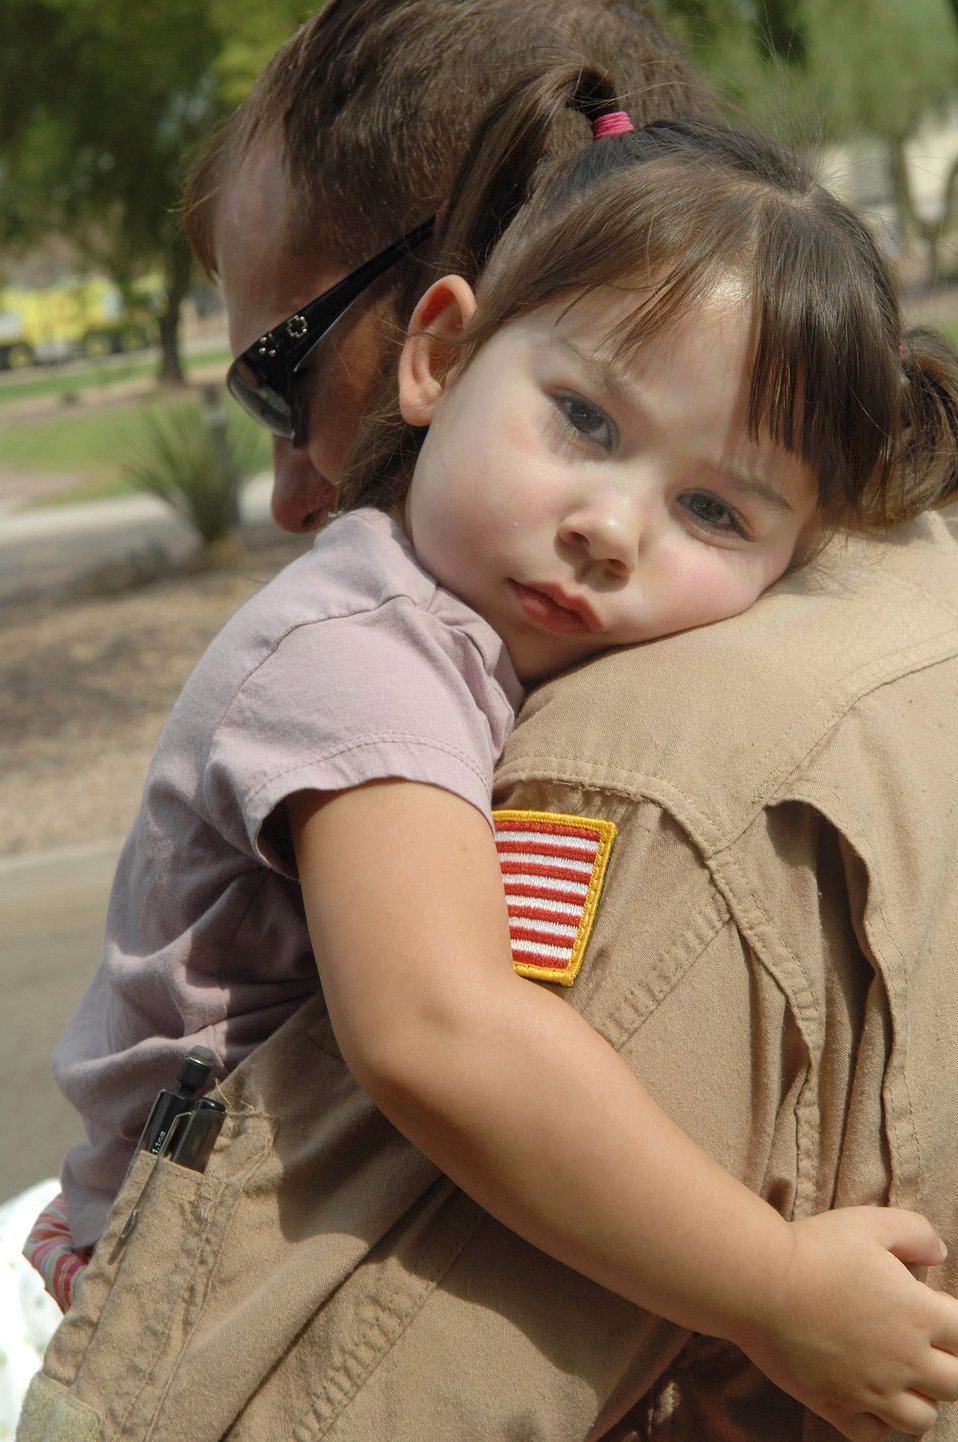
Together again

Two-year-old Madison rests on the shoulder of her dad, Staff Sgt. Todd McKerracher, after being reunited July 9 at Davis-Monthan Air Force Base, Ariz. He had just returned from a deployment to Balad Air Base, Iraq. Sergeant McKerracher is assigned to the 55th Rescue Squadron.